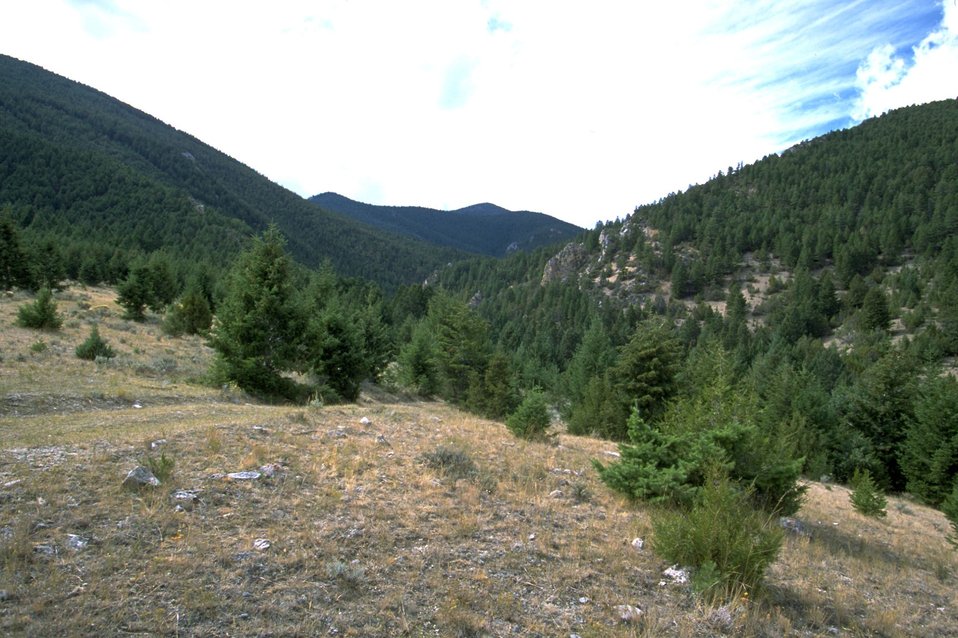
Scenc Vista in the Axolotl Lake area